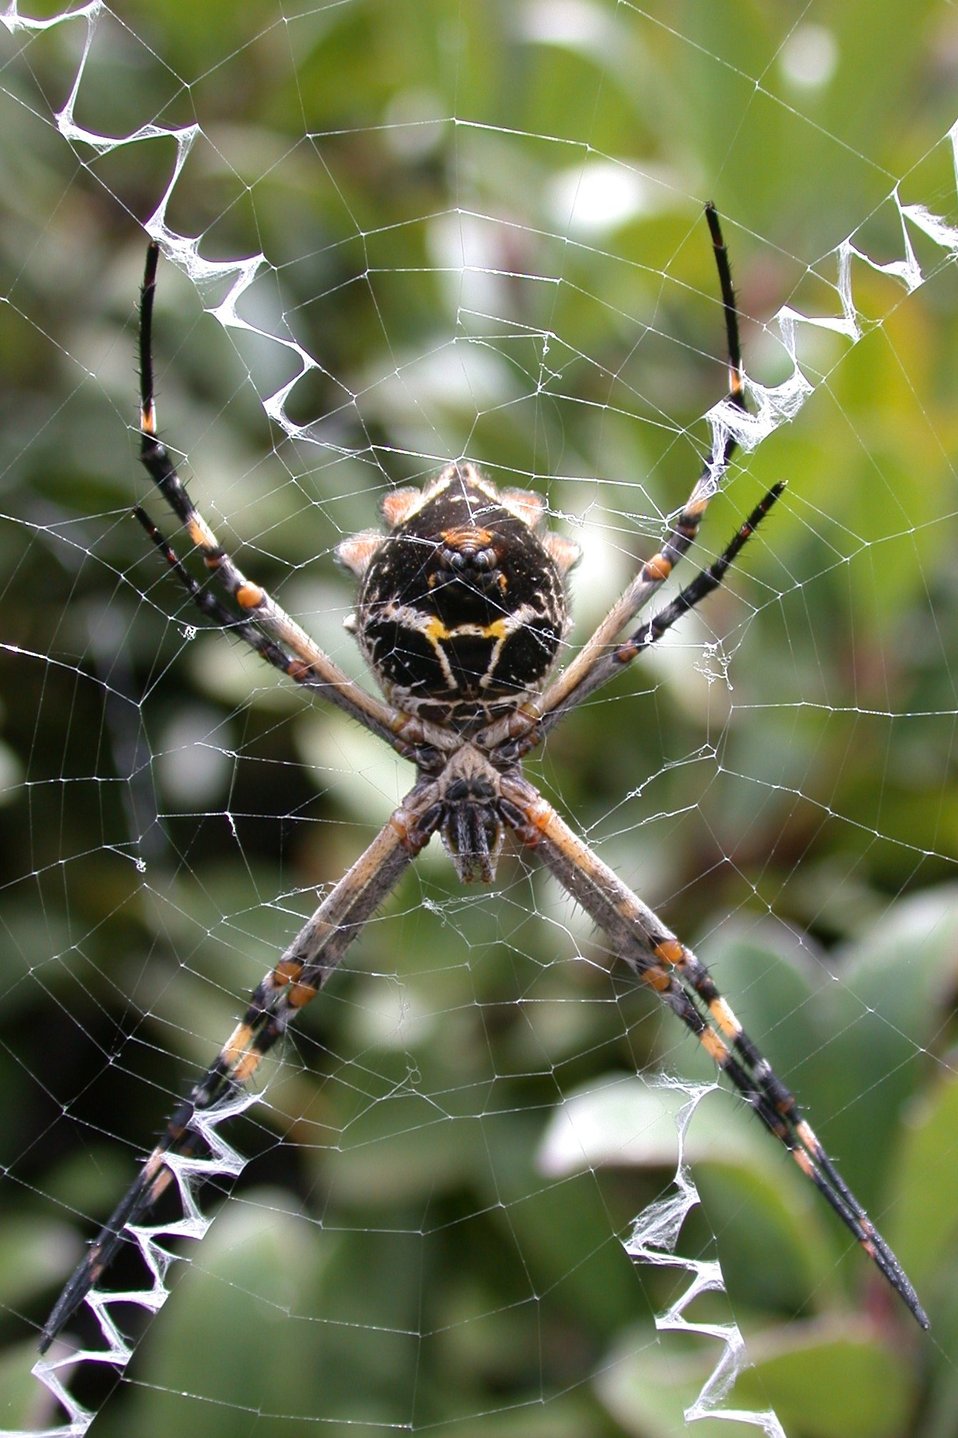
Argiope argentata in Carlsbad, California